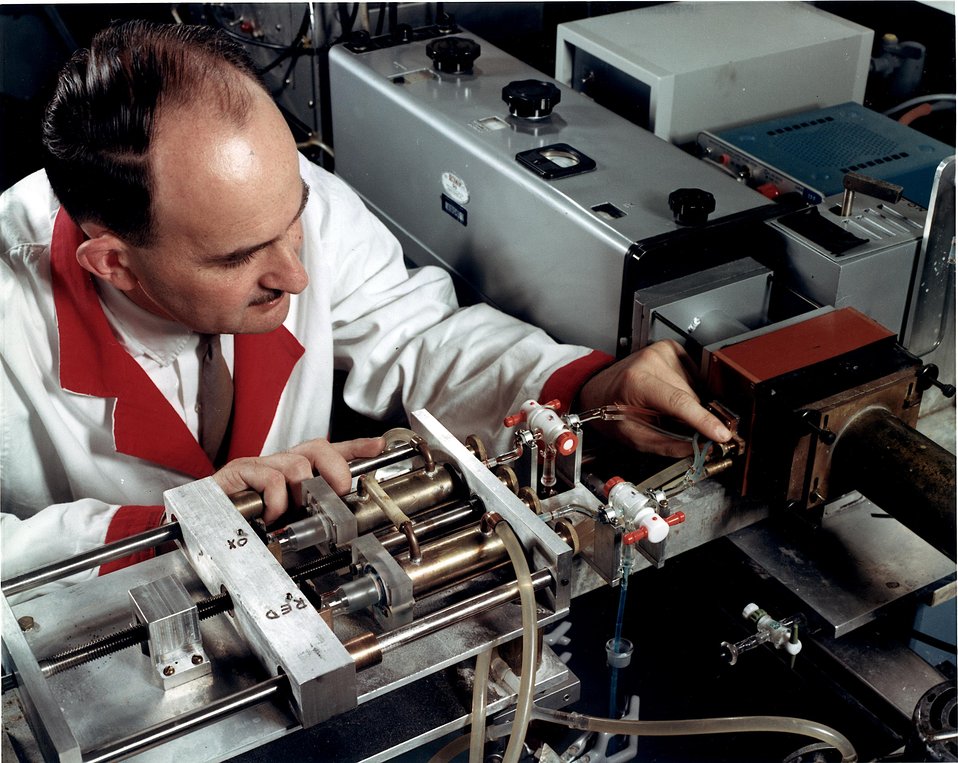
Flow apparatus which is used to study the rates of rapid chemical
reactions in solution. Reactions with half-times of few milliseconds can
be followed on this apparatus.